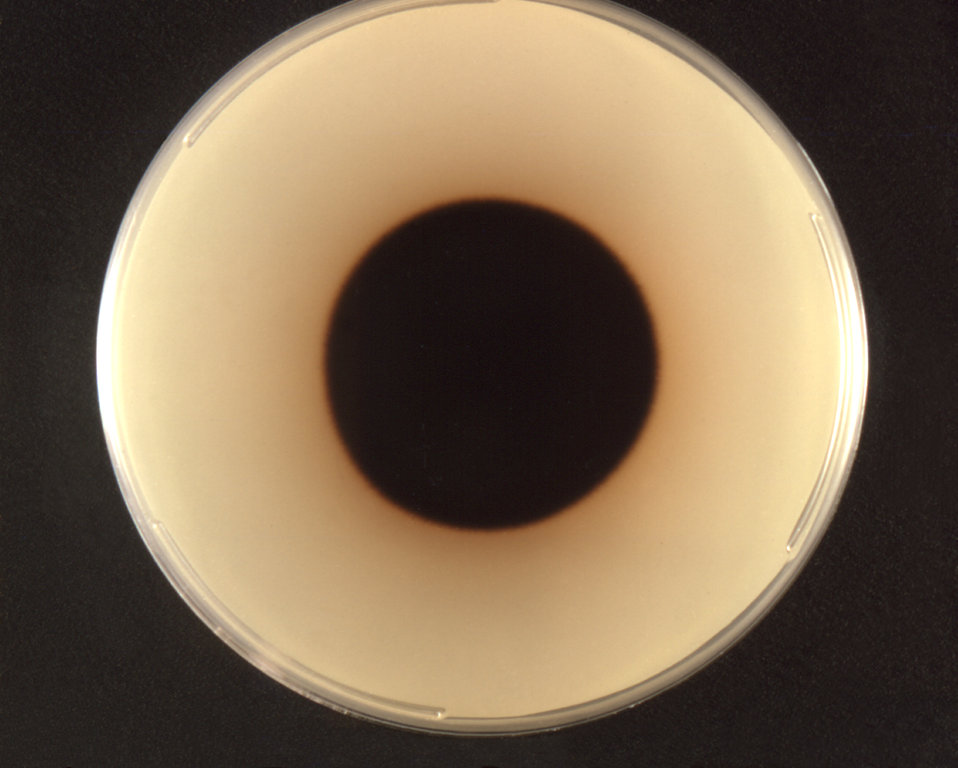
Photographed from the front, this image depicted a Petri dish containing a single Ochroconis gallopavum fungal colony, formerly known as Dactylaria gallopavum. Being a dematiaceous, or pigmented fungus, you'll note that the coloration of this colony ia a dark brown from the reverse, however, if you look at PHIL 1181, which depicts this colony from the obverse (front), you'll note that the coloration, though brown, is more varied, and radiates in a ringed pattern from a raised center. Also, the colonial texture is velvety in appearance.